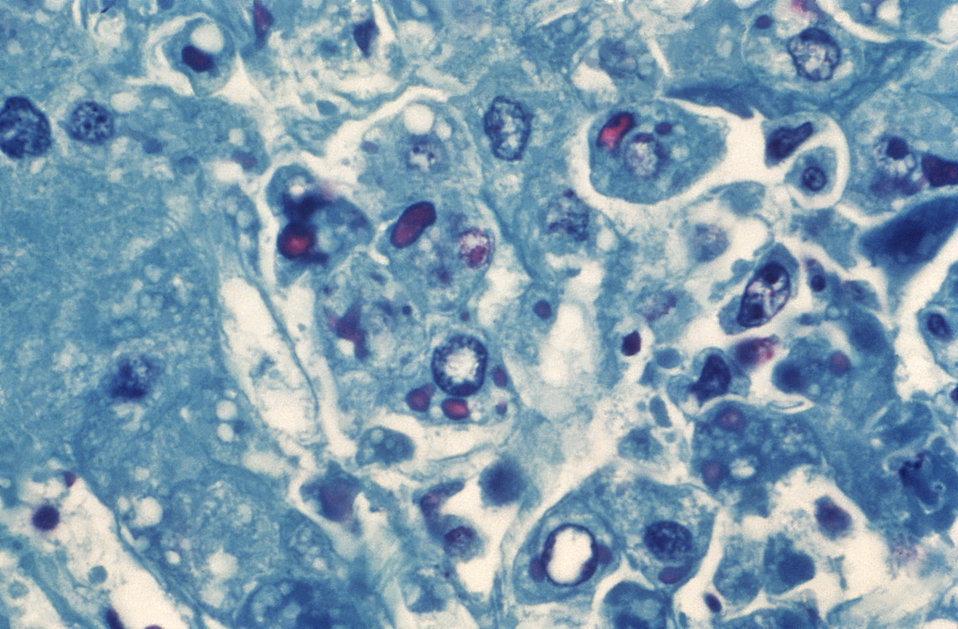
This micrograph shows human liver tissue infected with the Ebola virus, the cause of Ebola hemorrhagic fever.